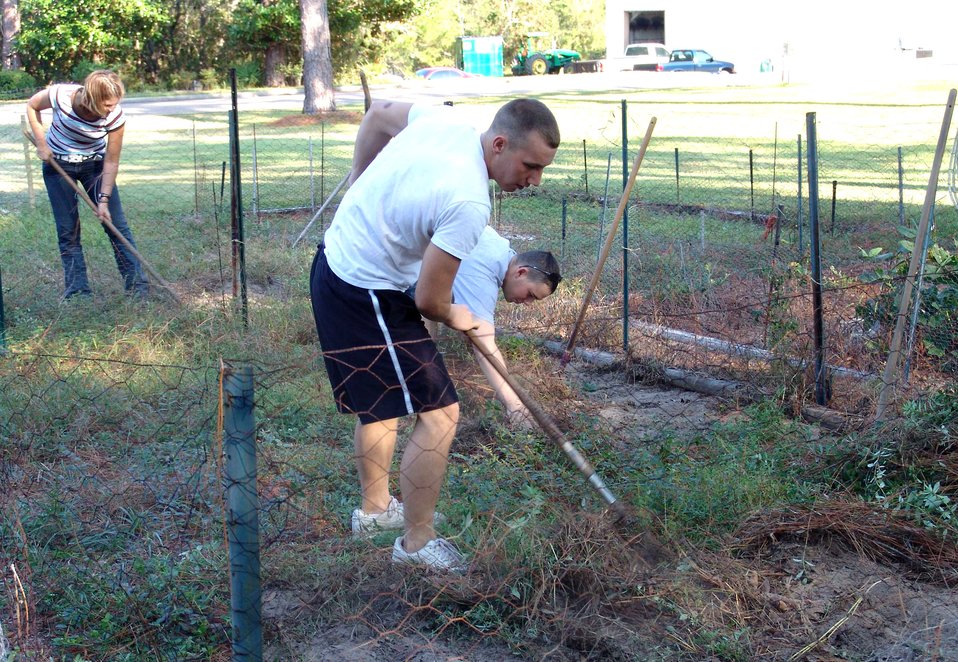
Airmen help enlisted village

SHALIMAR, Fla. (AFPN) -- Airman Sam Hughes works with other students to clear a community garden plot at the Bob Hope Village here. Residents of Bob Hope and Theresa villages and Eglin Air Force Base's Thrift Shop benefited from the Airmen's labor as they participated in Make A Difference Day Oct. 22 and 28. The day is an annual event, the most encompassing national day of helping others. Airman Hughes is a Naval School Explosive Ordnance Disposal student.